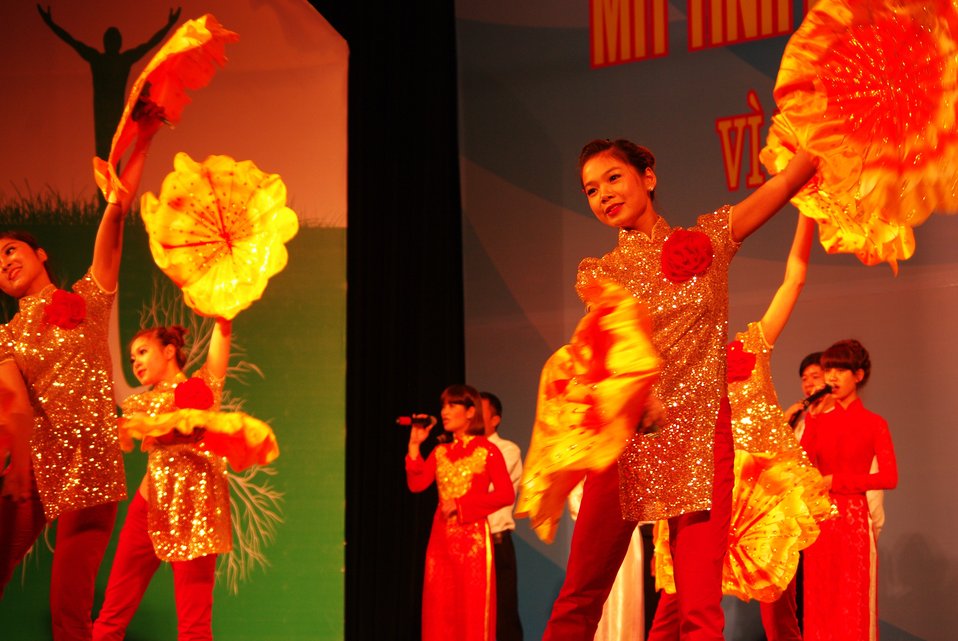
IMGP8Performers at the World TB Day Event in Hanoi105

March 23, 2013